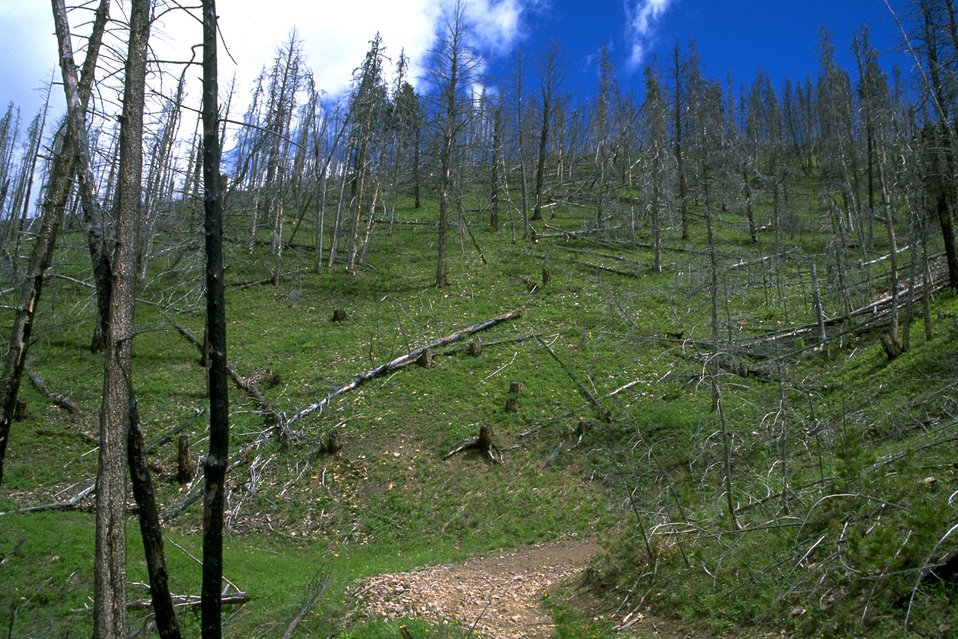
An old burn area in the Judith Mountains